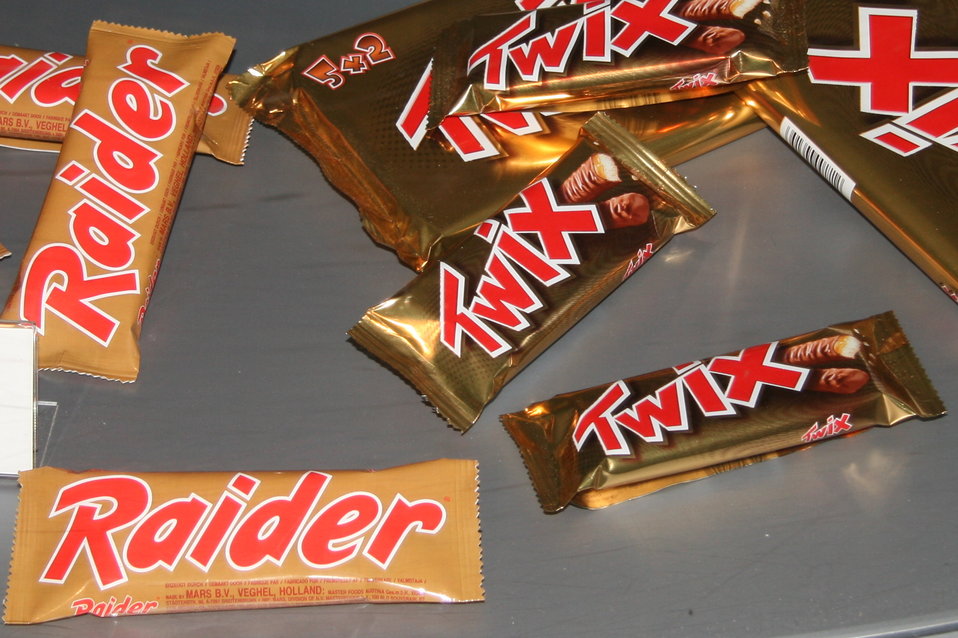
Deutsch: Raider und Twix Schokoriegel im Schokoladenmuseum Köln